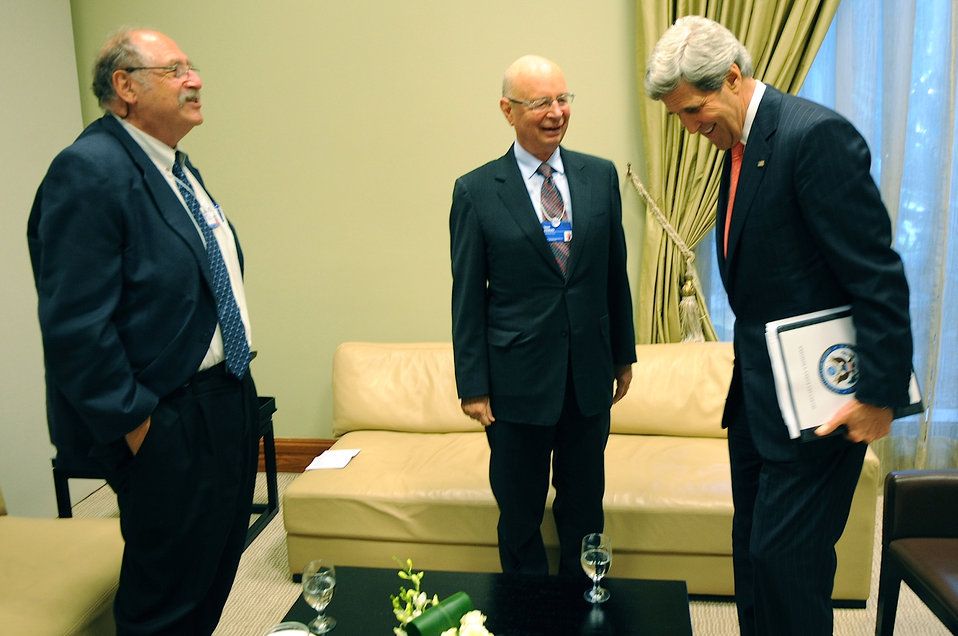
Secretary Kerry Attends the World Economic Forum

U.S. Secretary of State John Kerry shares a laugh with Klaus Schwab, center, founder of the World Economic Forum, and Yossi Vardi, left, chairman of International Technology Ventures, before the start of a session of the World Economic Forum in Dead Sea, Jordan, on May 26, 2013.